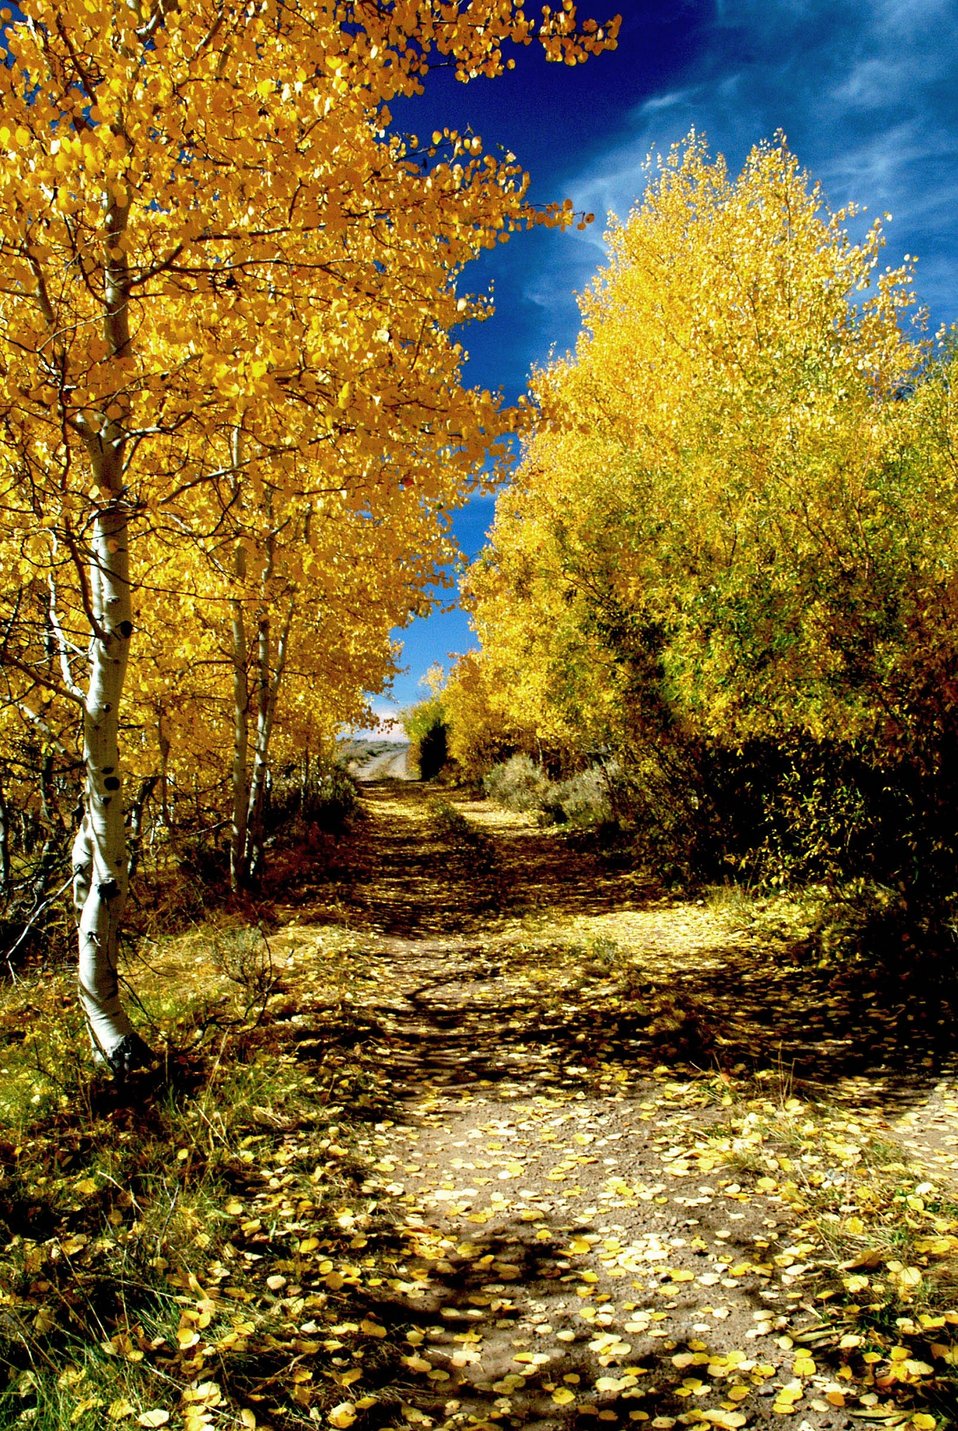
Fall colors near Lily Lake on Steens Mountain. Mark Armstrong, Burns Landscape1